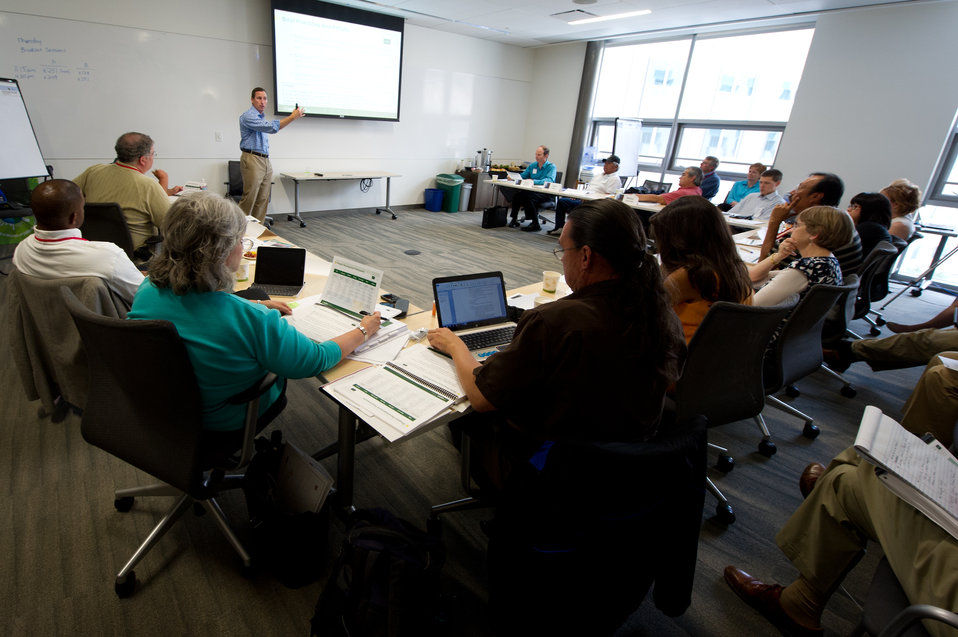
Office of Indian Energy Pilot Session

June 07, 2012 - Tribal leaders and federal and university representatives visited NREL June 7-8, 2012, for the DOE Office of Indian Energy Pilot Session for Curriculum and Course Offerings.